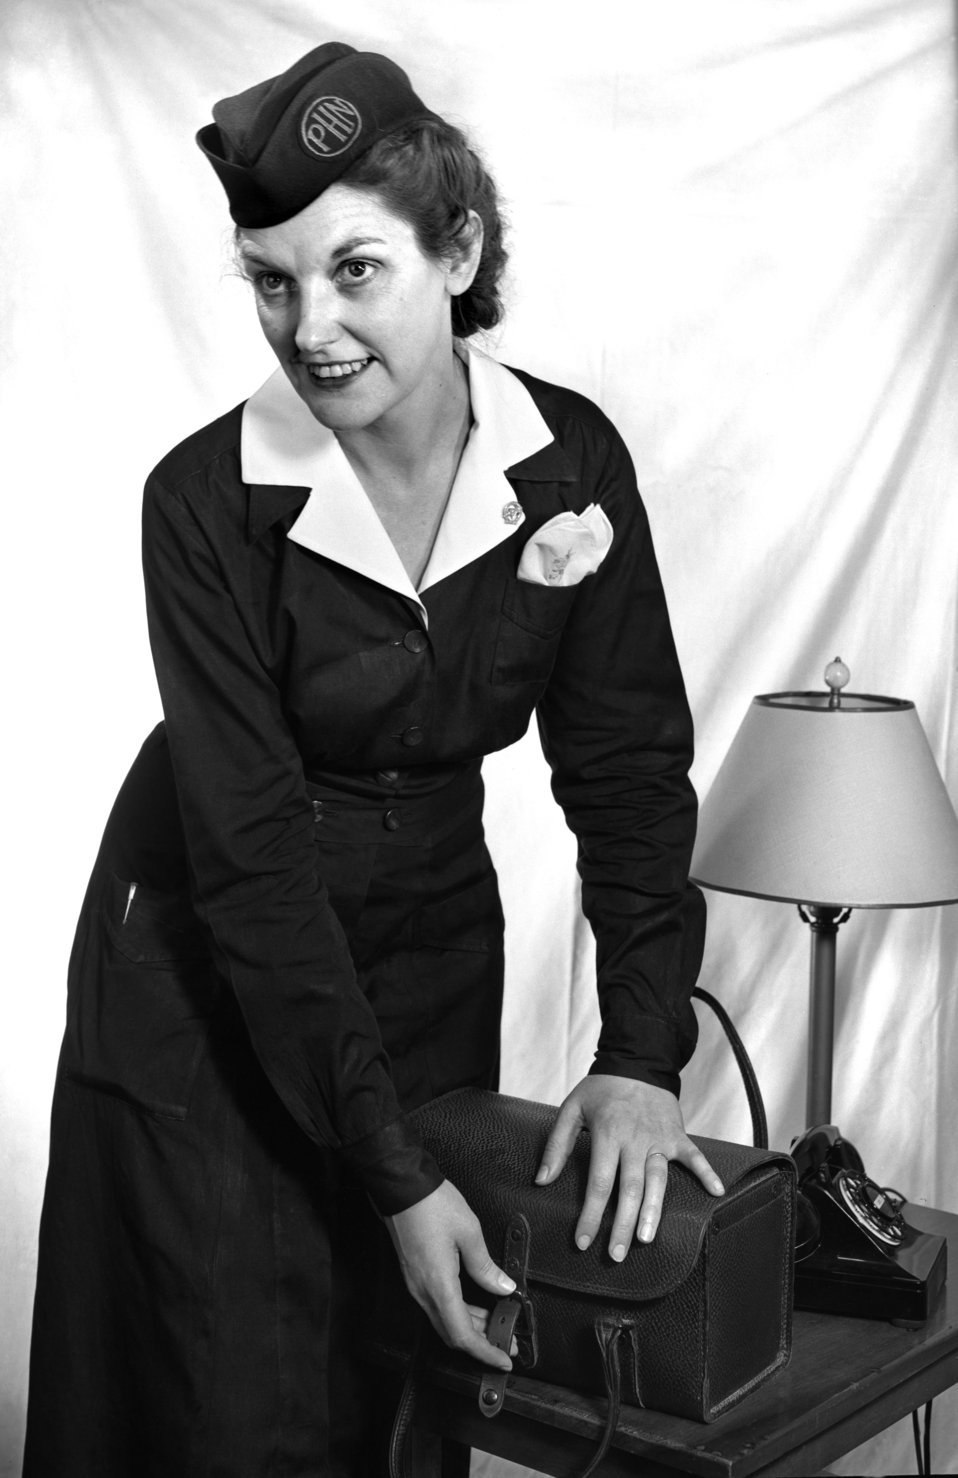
Public Health Nurse Oak Ridge 1948

4445 DOE photo Ed Westcott 4-13-1948 Oak Ridge Tennessee